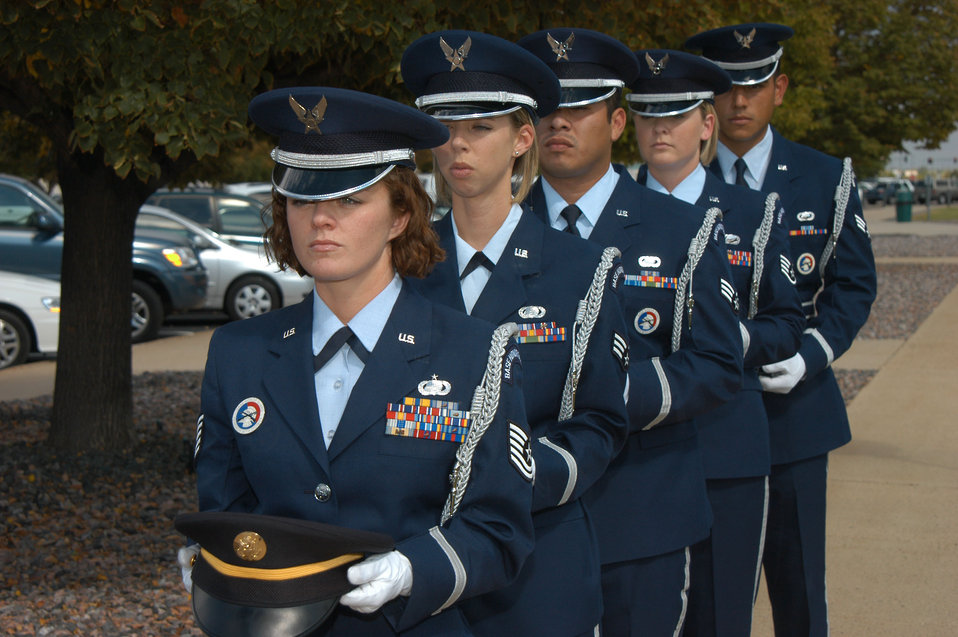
Denver-area units hold POW/MIA Recognition Day vigil

Members of the Air Reserve Personnel Center and Defense Finance and Accounting Service honor guard wait to place service hats on the POW/MIA table during a Prisoner of War and Missing in Action remembrance ceremony in Denver Sept. 14. Military and civilian employees of ARPC, Defense Finance and Accounting Service and the 4th Manpower Requirements Squadron are reading the names of more than 10,000 people missing or taken prisoner from the Cold War through current operations. The ceremony runs from 3 p.m. Sept. 14 through 3 p.m. Sept. 15.